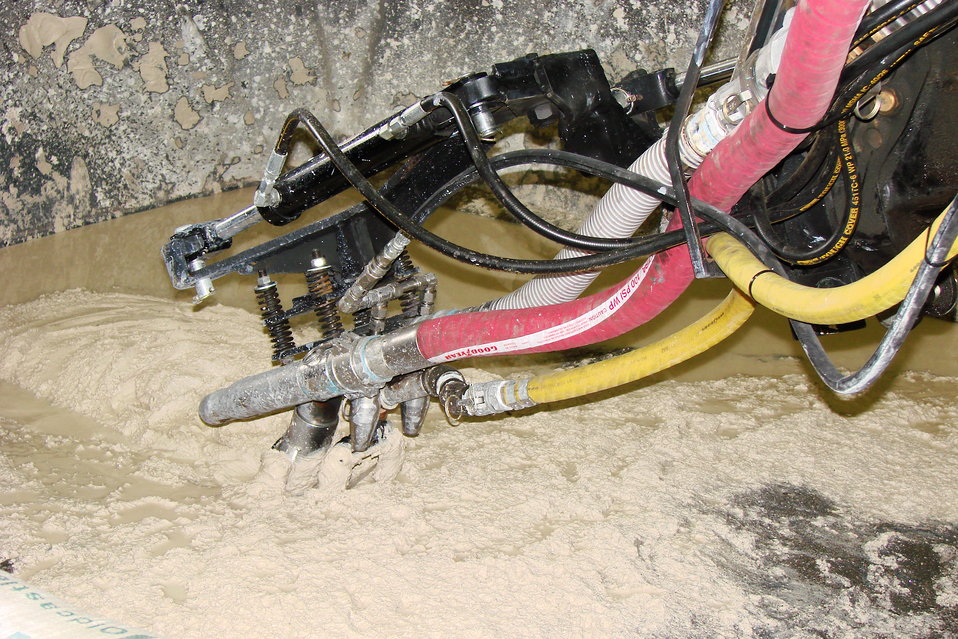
ARRA-funded technology aims to improve waste removal from Hanford tanks

Engineers show off the MARS vacuum retrieval system to a group of stakeholders at a recent demonstration. The ARRA-funded technology is expected to improve tank waste retrieval at Hanford.